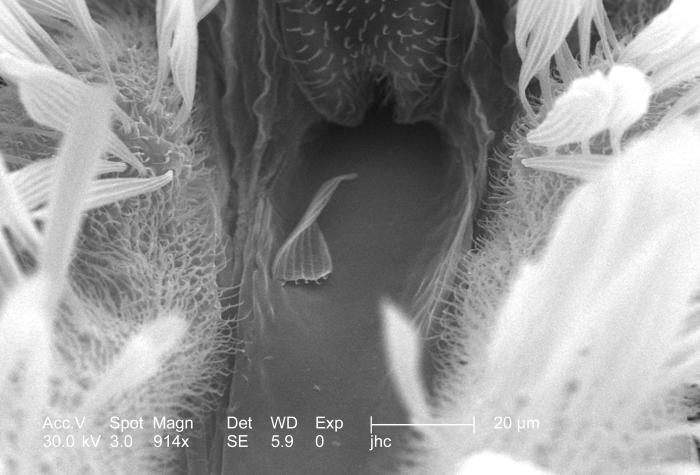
Magnified 914x, double that of PHIL 8783, this scanning electron micrograph (SEM) revealed some of the morphologic features displayed on the exoskeletal surface of an Anopheles gambiae mosquito's anterior head region. Included in this field of view was the proboscis, and two maxillary palps. This particular view hones in on the mouth of the insect, and its trough-like configuration as the labrum of the proboscis fed into the mouth cavity. The labrum is the larger of two sharp structures known as "stylets", which pierce the skin of its hosts, and together are known as the "fascicle". Together the sheath and stylets are known as the proboscis.